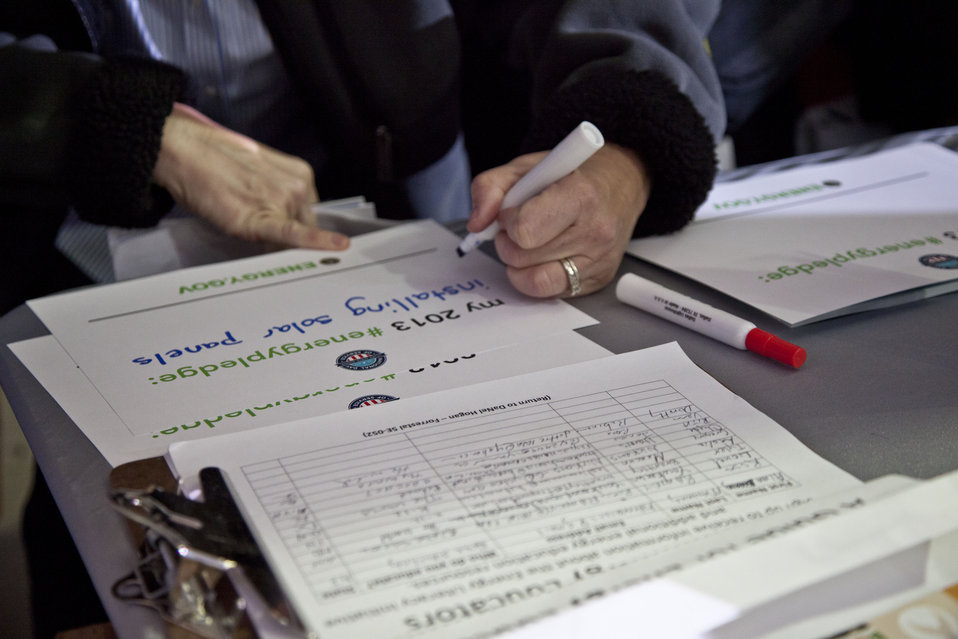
What's your #energypledge?